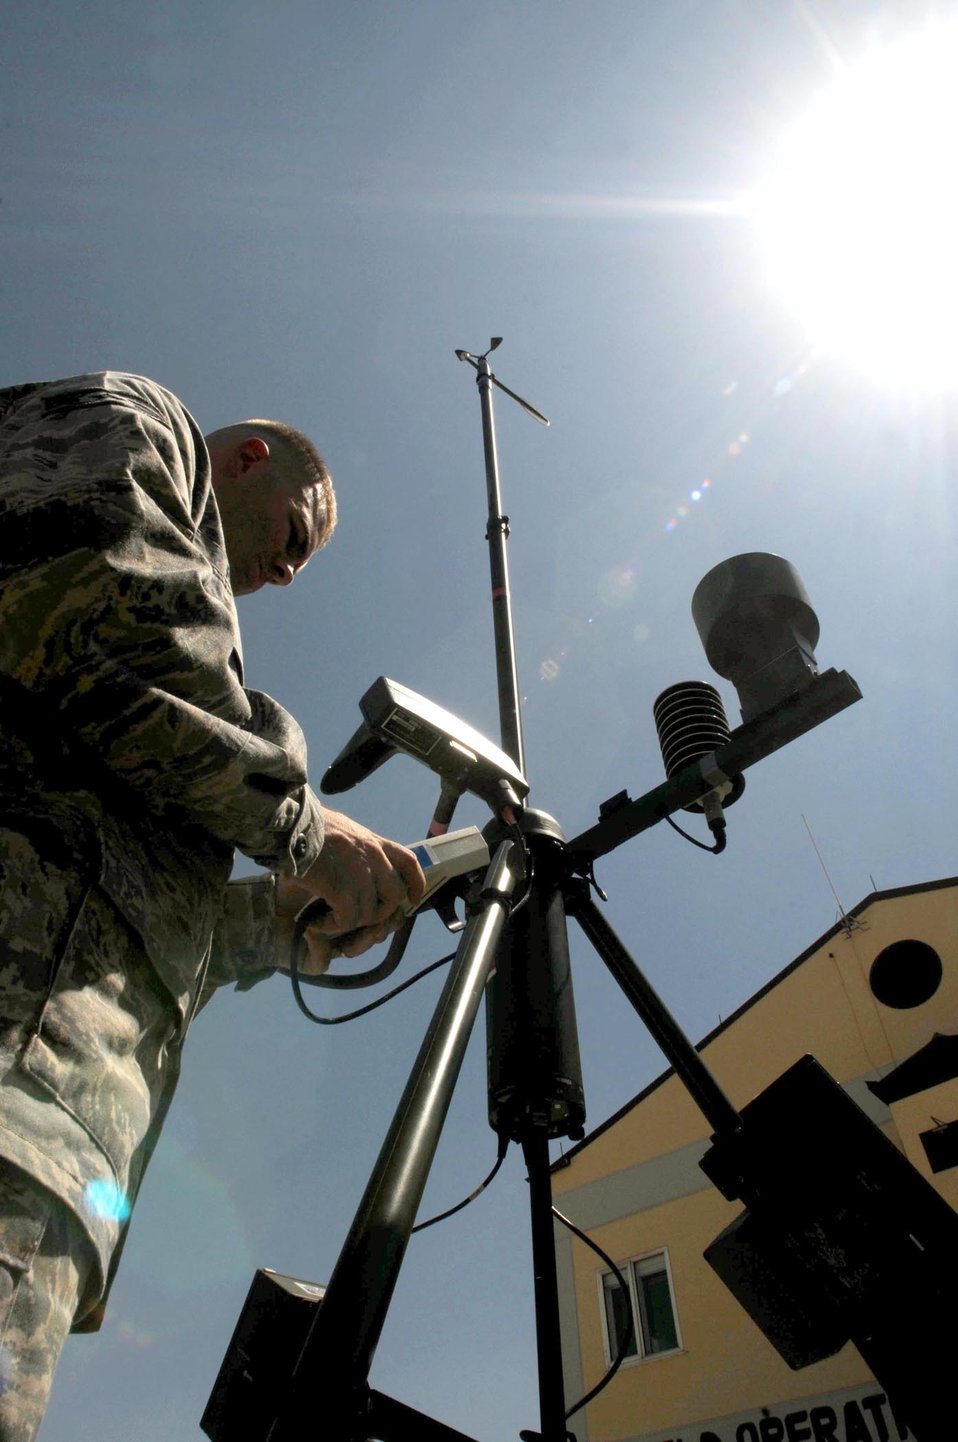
Incirlik weather techs train to support contingency operations

Staff Sgt. Jeffrey Robbins measures wind direction with a handheld monitor on a Tactical Meteorological Observing System Aug. 25, 2010, at Incirlik Air Base, Turkey. The TMOS is a tactical, deployable weather sensing device used to collect real-time weather data from austere locations, forward operating bases and remote sites. Sergeant Robbins is a weather technician assigned to the 39th Operations Squadron.